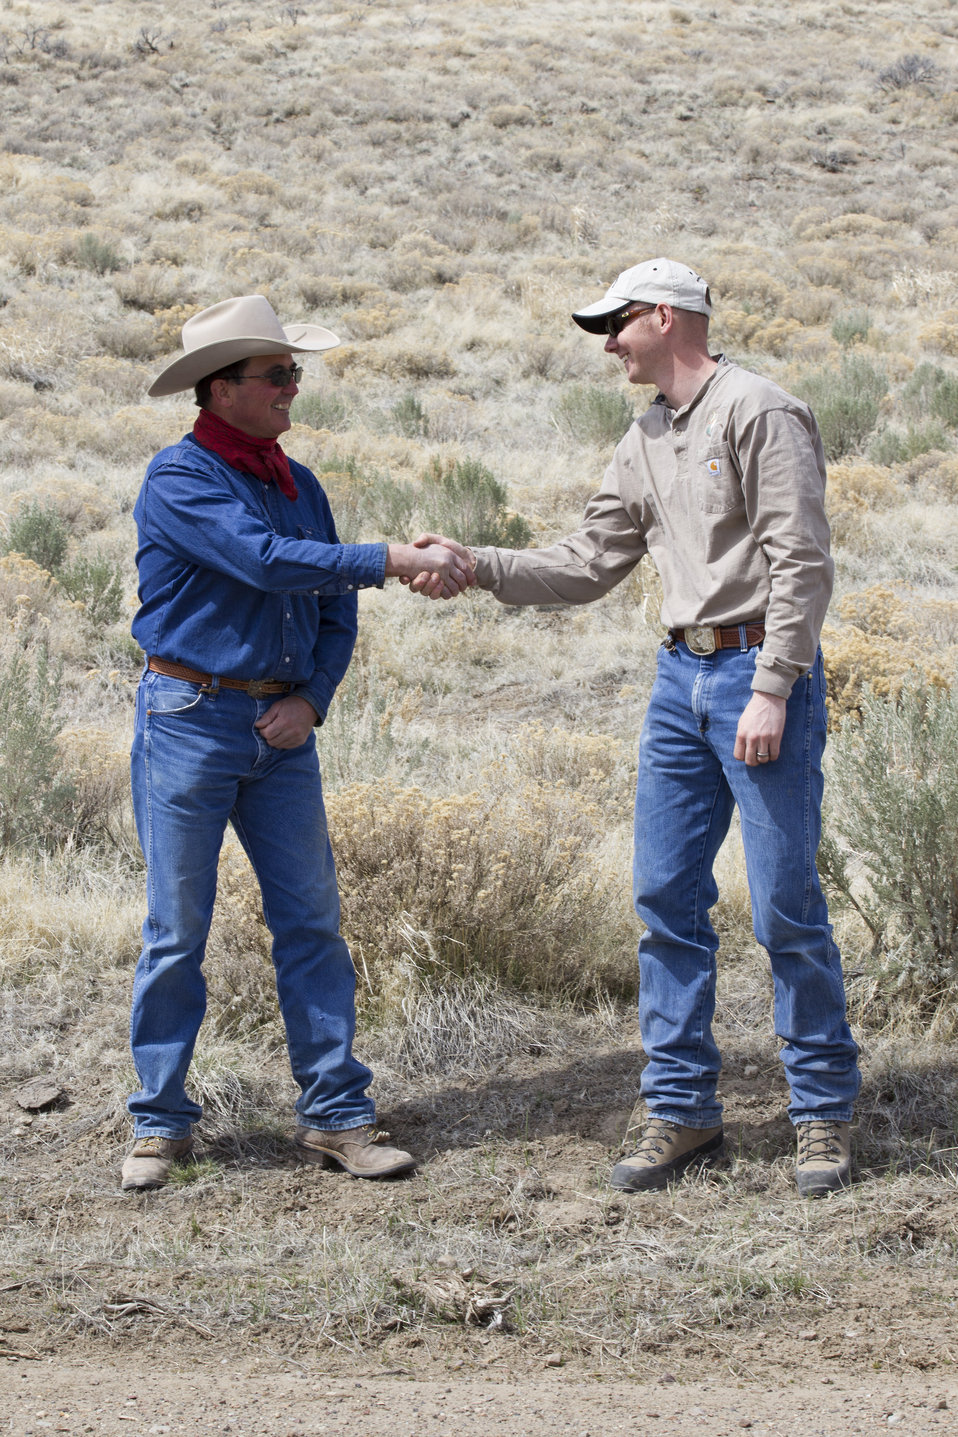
Landowner Meeting with Partners for Fish & Wildlife Program biologist